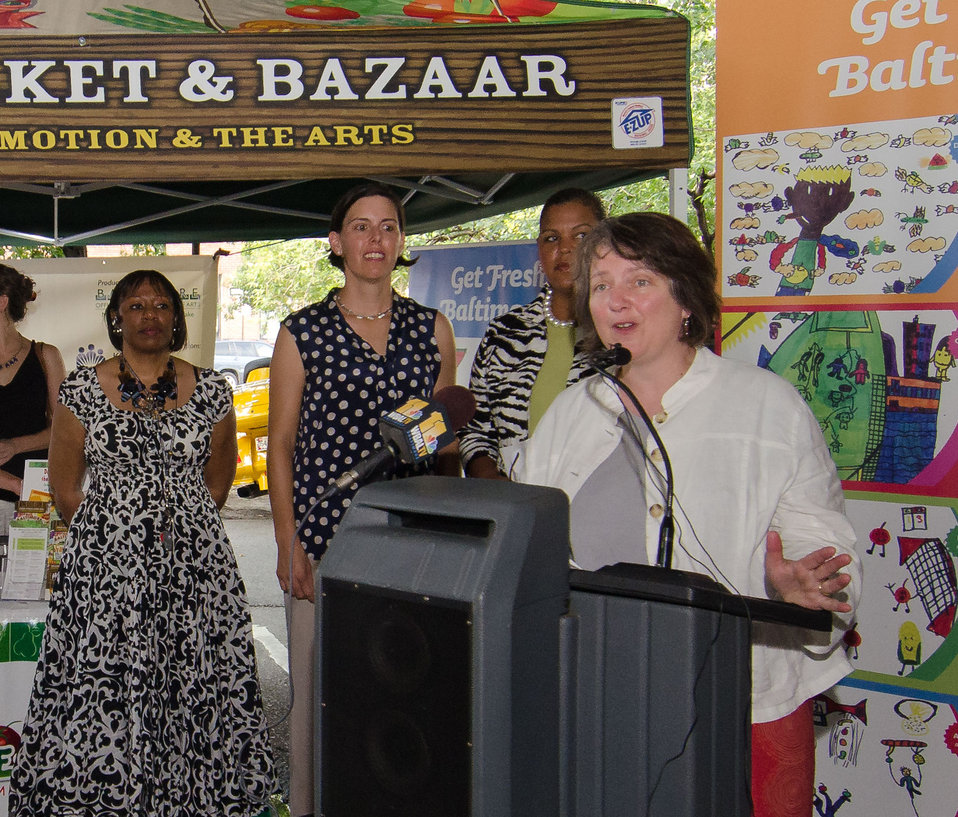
Agriculture Deputy Secretary Kathleen Merrigan helps launch Baltimore’s Farmers Market and Bazaar use of the U.S. Department of Agriculture’s (USDA) Food Nutrition Service’s (FNS) Supplemental Nutrition Assistance Program (SNAP) Electronic Benefits Transfer (EBT) cards, Baltimore Bucks, and debit card utilizing a wireless connection in Baltimore, MD on Sunday, July 8, 2012. The U.S. Department of Agriculture, Kaiser Permanente of the Mid-Atlantic States, Abell Foundation, the Harry and Jeanette Weinberg Foundation, the Baltimore Community Foundation, Maryland Hunger Solutions, the Maryland Department of Agriculture Baltimore Office of Promotions and the Arts, and Department of Social Services are participating partners in the farmers market.